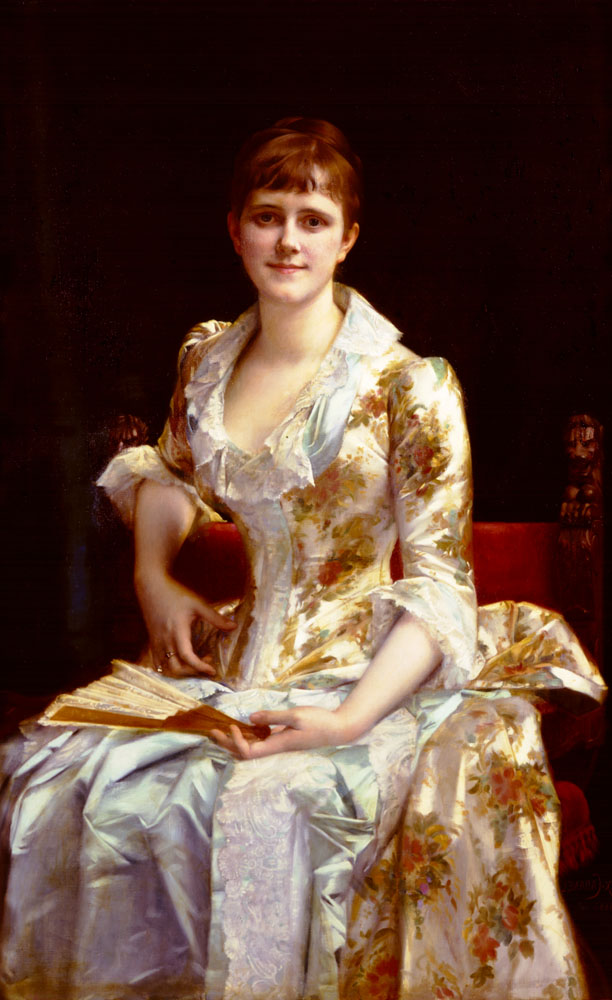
Alexandre Cabanel - Portrait Of Young Lady